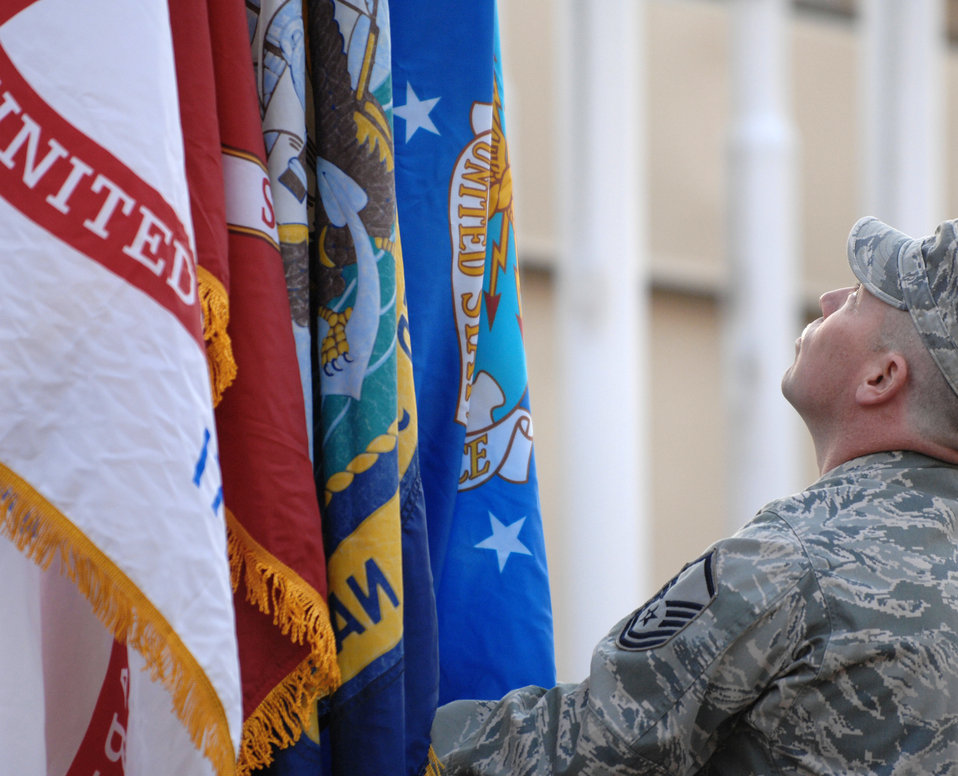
Operation Enduring Freedom

U.S. Air Force Master Sgt. Norman Rutter post the Air Force flag during the Veterans Day ceremony at Camp Eggers, Kabul, Afghanistan, Nov. 11, 2009. Ten countries were represented during the commemoration ceremony honoring service members past and present. Master Sgt. Rutter is deployed from Seymour Johnson Air Force Base, N.C. and hails from Manassas, Va.